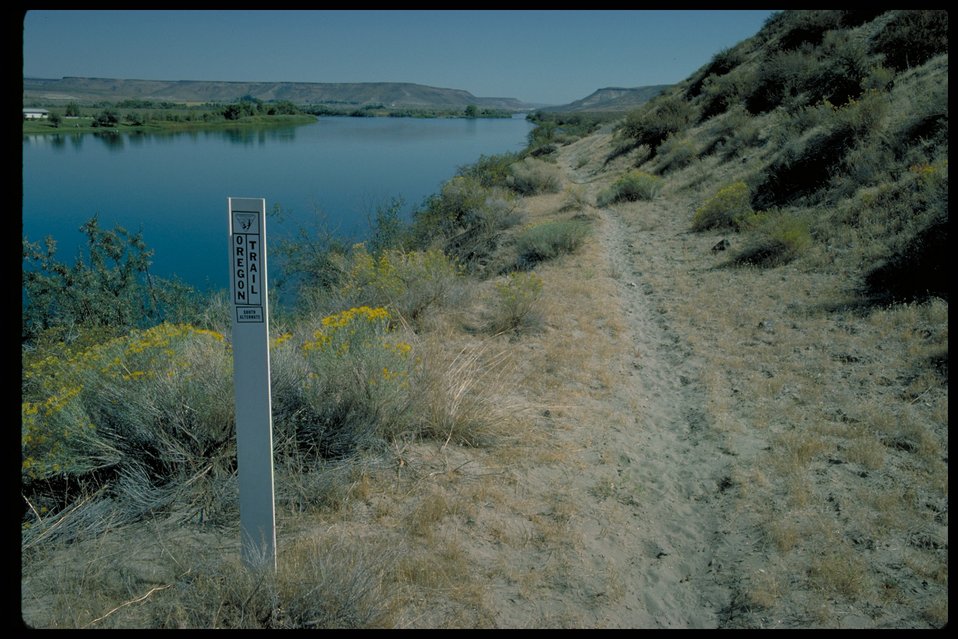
Oregon Trail South of Hammett Lower Snake River District